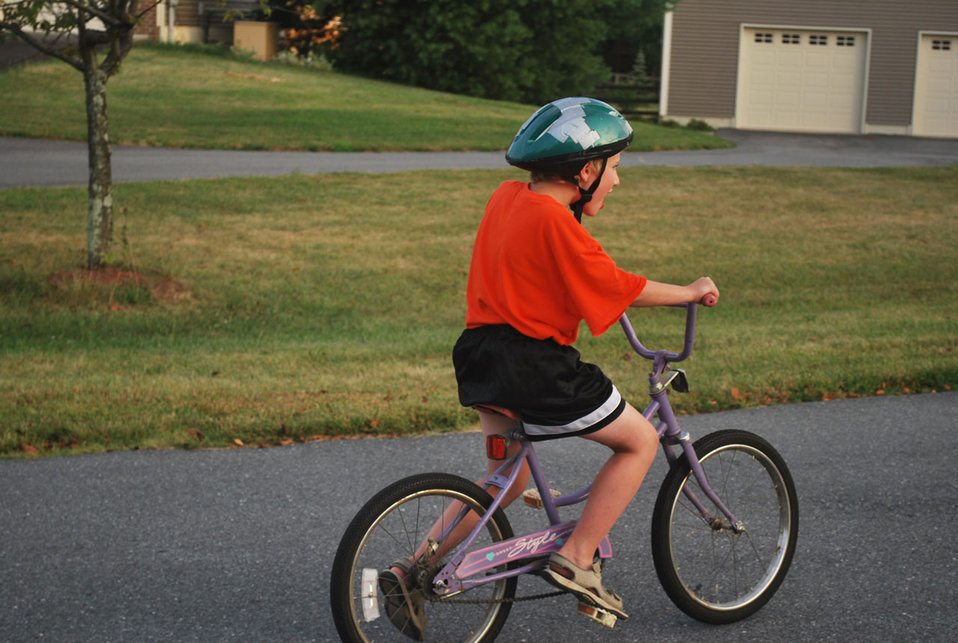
Child on a bike.